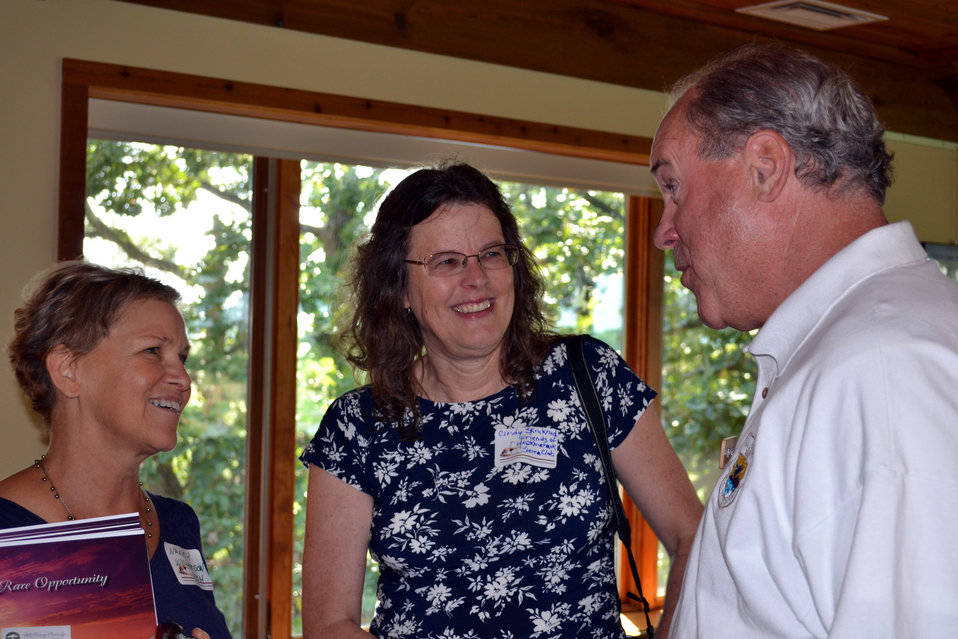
Meet and Greet with Partners

Deputy Director Charlie Wooley meets with founders of Friends of Hackmatack.